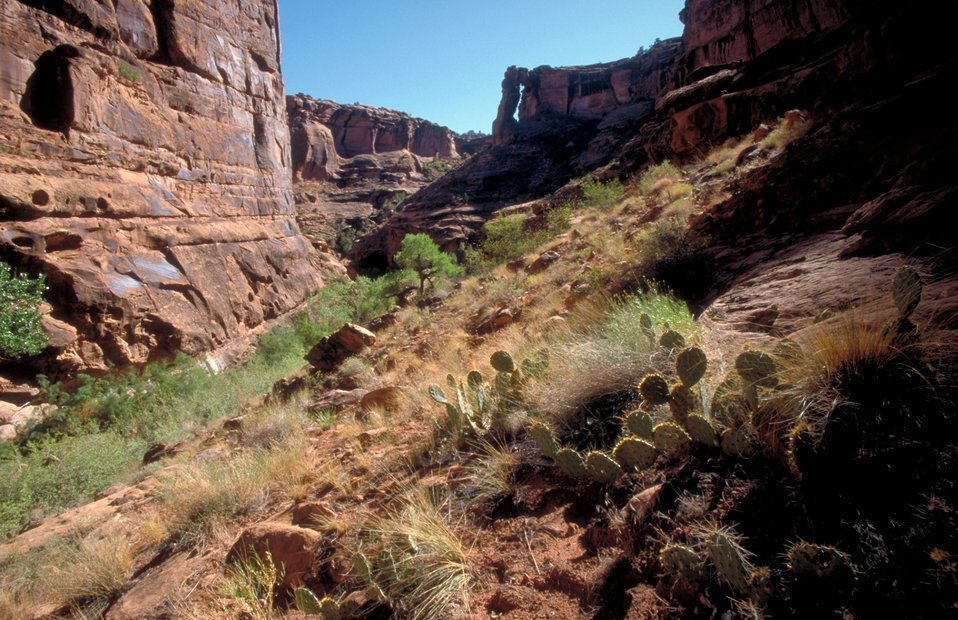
Hunter Canyon near Moab, Utah.